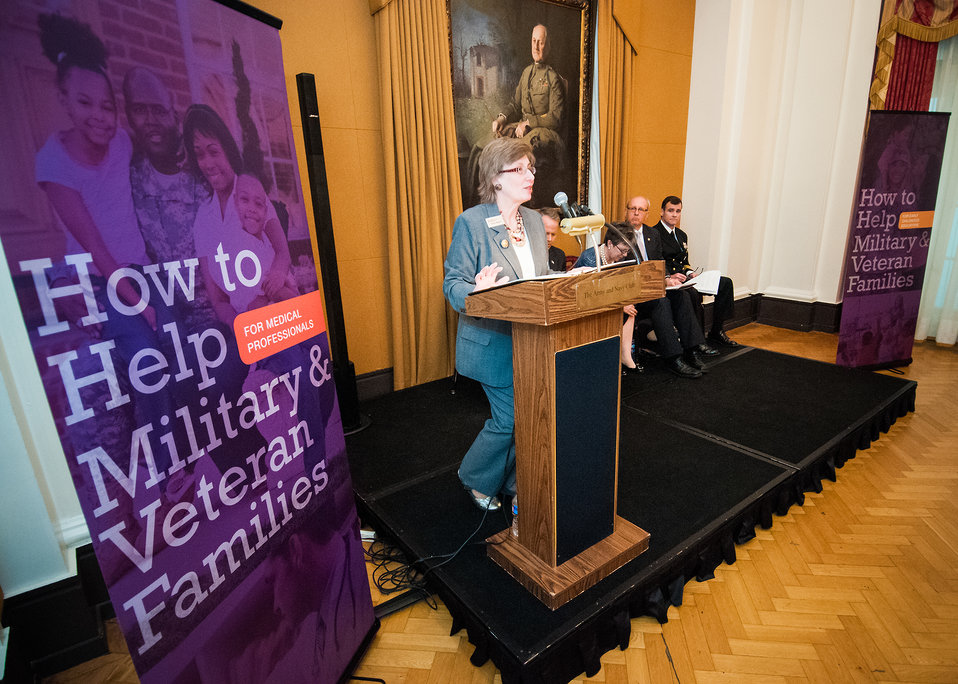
Joyce Raezer, Executive Director National Military Family Association and Mistress of Ceremonies introduced the guest speakers at the United States Department of Agriculture (USDA) and Department of Defense (DOD) jointly launch event for the 'How to Help Military and Veteran Families' - a series of publications produced jointly by the USDA, National Institute of Food and Agriculture (NIFA) and DOD at the Army-Navy Club in Washington, DC, Monday, April 15, 2013.